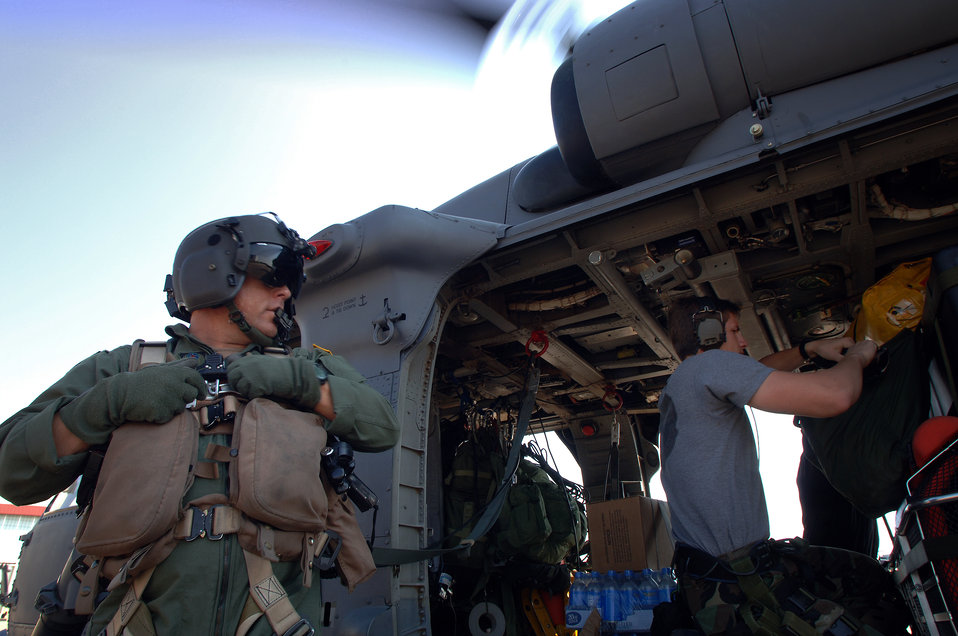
Airmen 'pave' way for help

JACKSON, Miss. -- Tech. Sgt. Chris Costanzo dons a survival vest and harness before boarding an HH-60G Pave Hawk helicopter. Airmen from active-duty and Reserve units are here supporting the hurricane's rescue operation. As of Sept. 7, the rescue operation here has extracted more than 4,000 people trapped by flood waters. Sergeant Costanzo is an aerial gunner with the 66th Rescue Squadron from Nellis Air Force Base, Nev.